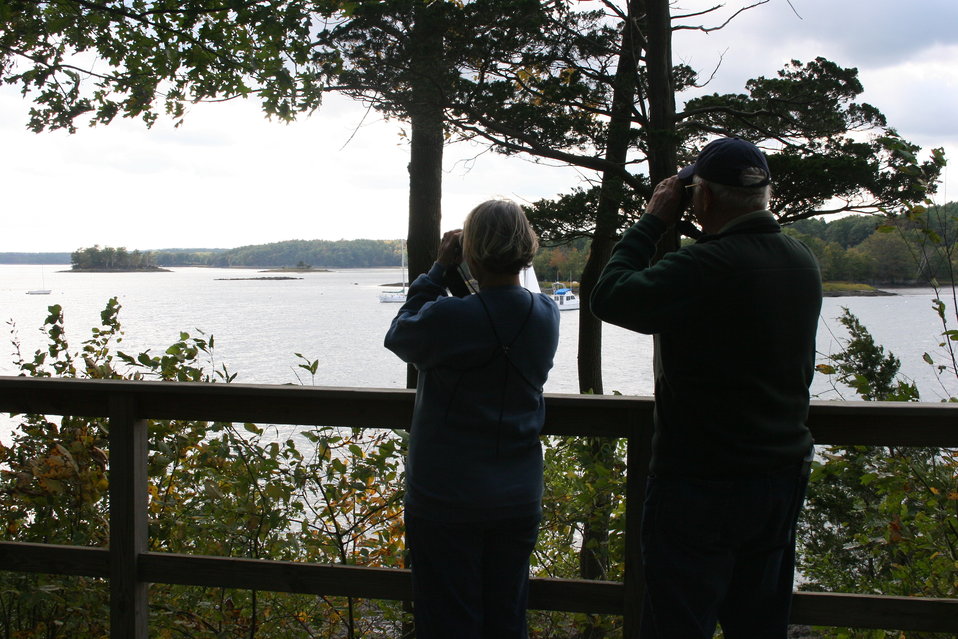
Bird watchers at Great Bay National Wildlife refuge, Newington, NH.